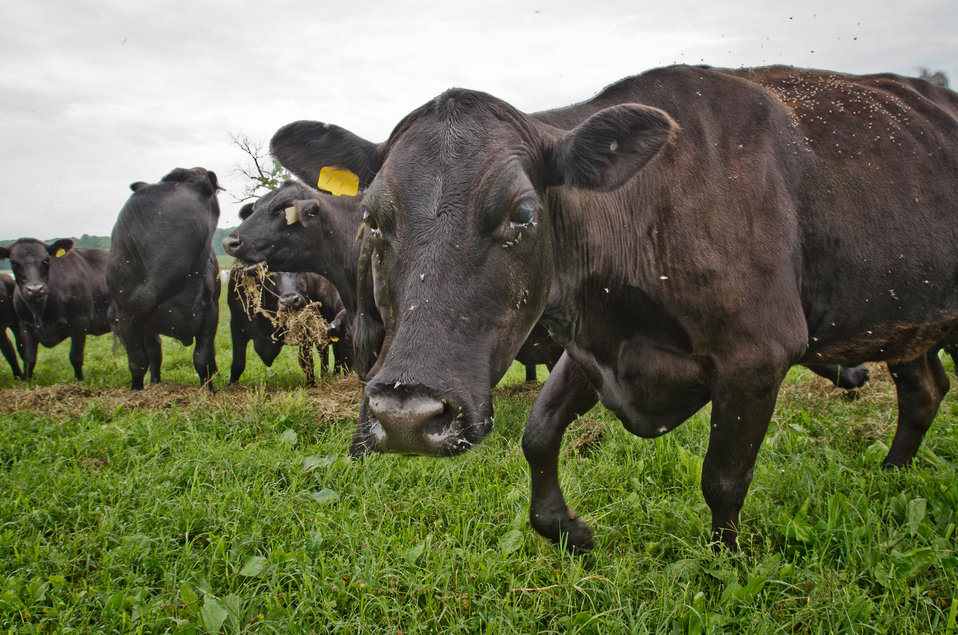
Black Angus cows and calves graze organic pastures, and for added nutrition and variety, they enjoy a daily feeding of sweet silage at Nick’s Organic Farm, owned by Nick Maravell, in Adamstown, MD on Friday, July 12, 2013. The white plastic wrapped bales of pasture grass and alfalfa have been fermenting for months to create sweet silage that stores well and can be used to feed cattle at varying amount all year long. The fermentation process sweetens the taste and increases the vitamin levels. The farm produces Black Angus beef, chicken, turkey, eggs, hay, soybeans, corn, alfalfa, orchard grass, rye; and other crops. The cattle are 100% grass-fed receiving certified organic pasture, certified organic hay (in winter), water and mineral salts mixed with sea kelp. The cattle are not fed hormones, antibiotics or animal products. Poultry feed from grain is ground from organic grain. The poultry also graze on organic pastures. The farm has conducted on-farm research with federal, state and non-profit agencies to refine organic practices. An organization such as the U.S. Department of Agriculture (USDA) Agricultural Research Service (ARS) center in Beltsville has been able to conduct research to improve organic crops and to breed and manage the cattle so that they have.